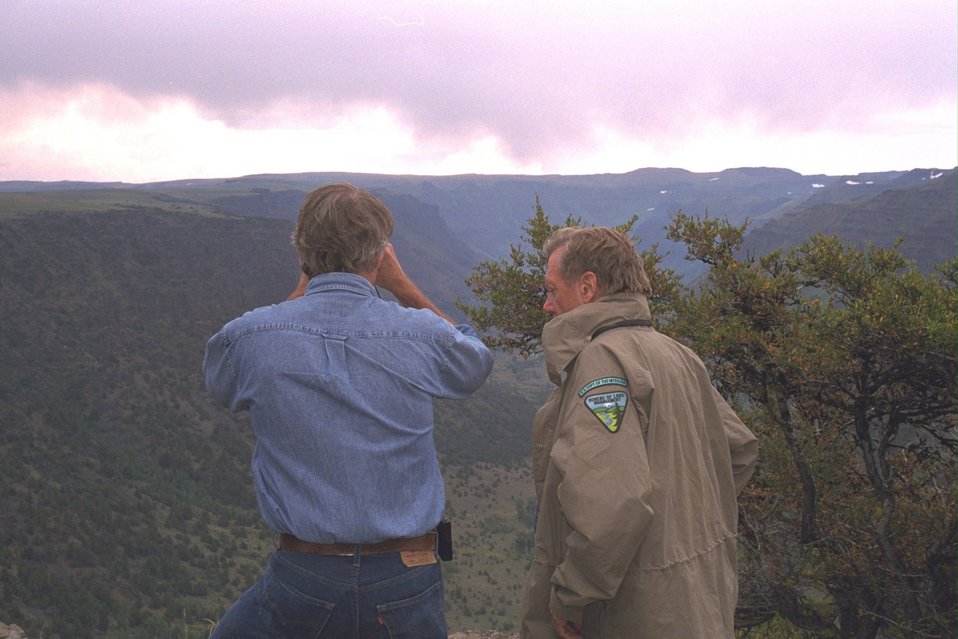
Secretary of the Interior, Bruce Babbitt, and Governor Kitzhaber discuss designation of Steens Mountain looking out at Big Indian Gorge.